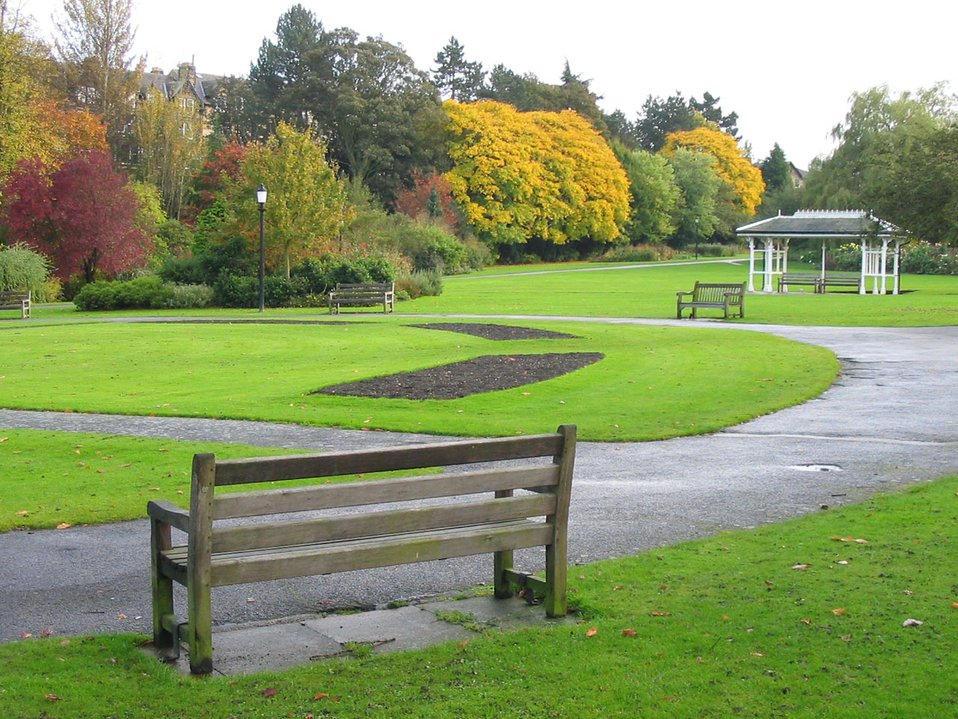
Bench in valley gardens

A bench in valley gardens park in autumn.